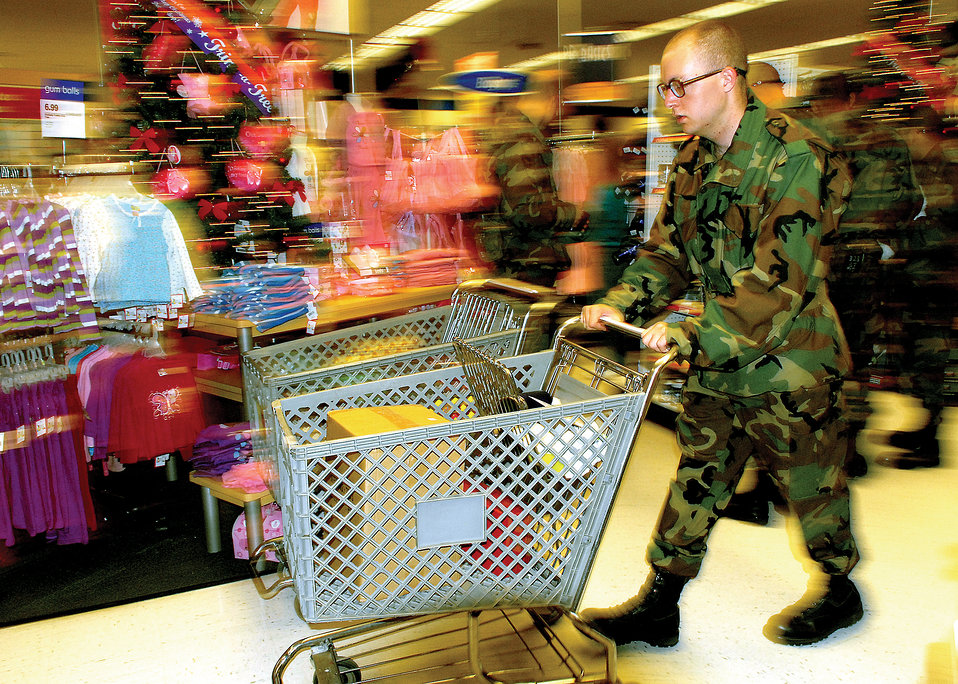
Trainees given chance to shop, ship presents

A basic trainee rushes through the Lackland Air Force Base, Texas, Main Exchange Dec. 9 to shop for holiday gifts. Under the Shop-A-Trainee program, trainees in the first, second and fifth week of training, plus trainees on medical hold, were able to go to the Army and Air Force Exchange Service to purchase holiday gifts.